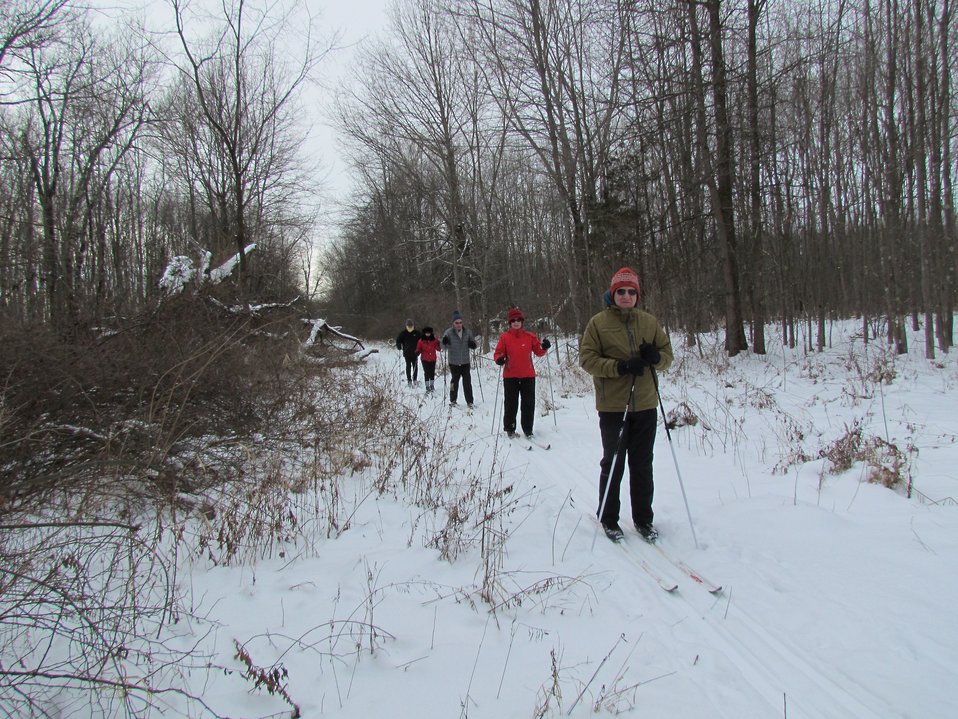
Great Swamp Refuge

Cross-country skiers explore Great Swamp National Wildlife Refuge wilderness in NJ in January 2014.